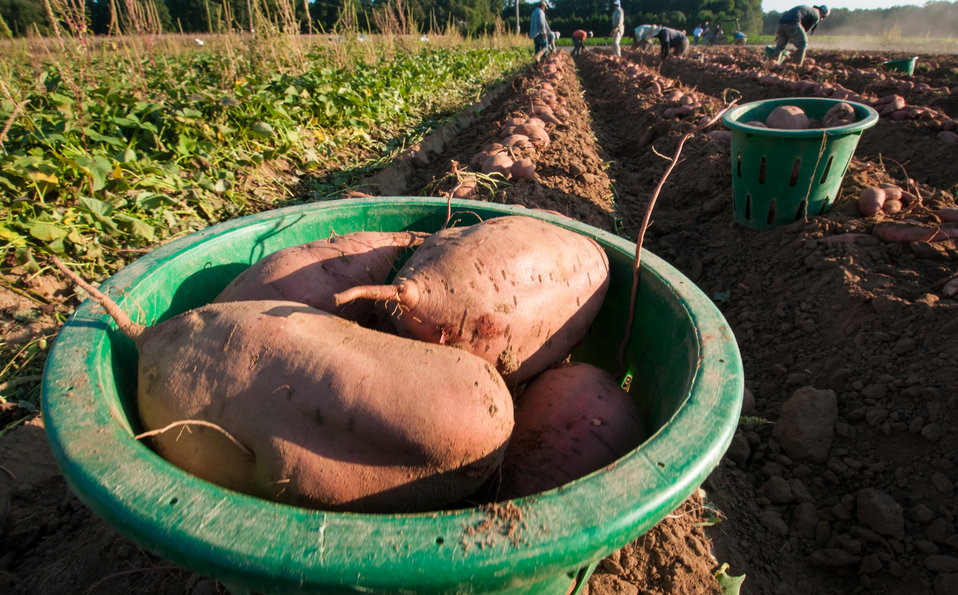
Large sweet potatoes are ploughed up for migrant workers to pick and sort according to size at Kirby Farms in Mechanicsville, VA on Sep. 20, 2013. Kirby Farms is a third-generation family farm that covers 500 acres, and generates produce and grains on a year-around operation. Please see the photoset description for more information about this farm operation.USDA photo by Lance Cheung.